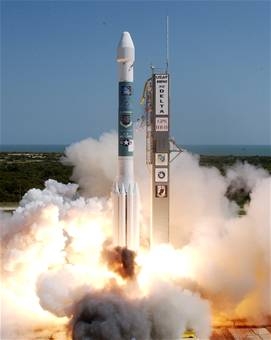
Air Force launches Delta II/GPS mission

A Delta II space launch vehicle lifts off from Complex 17A at Cape Canaveral Air Force Station, Fla., Sept. 25. It carried a NAVSTAR Global Positioning System satellite into orbit.